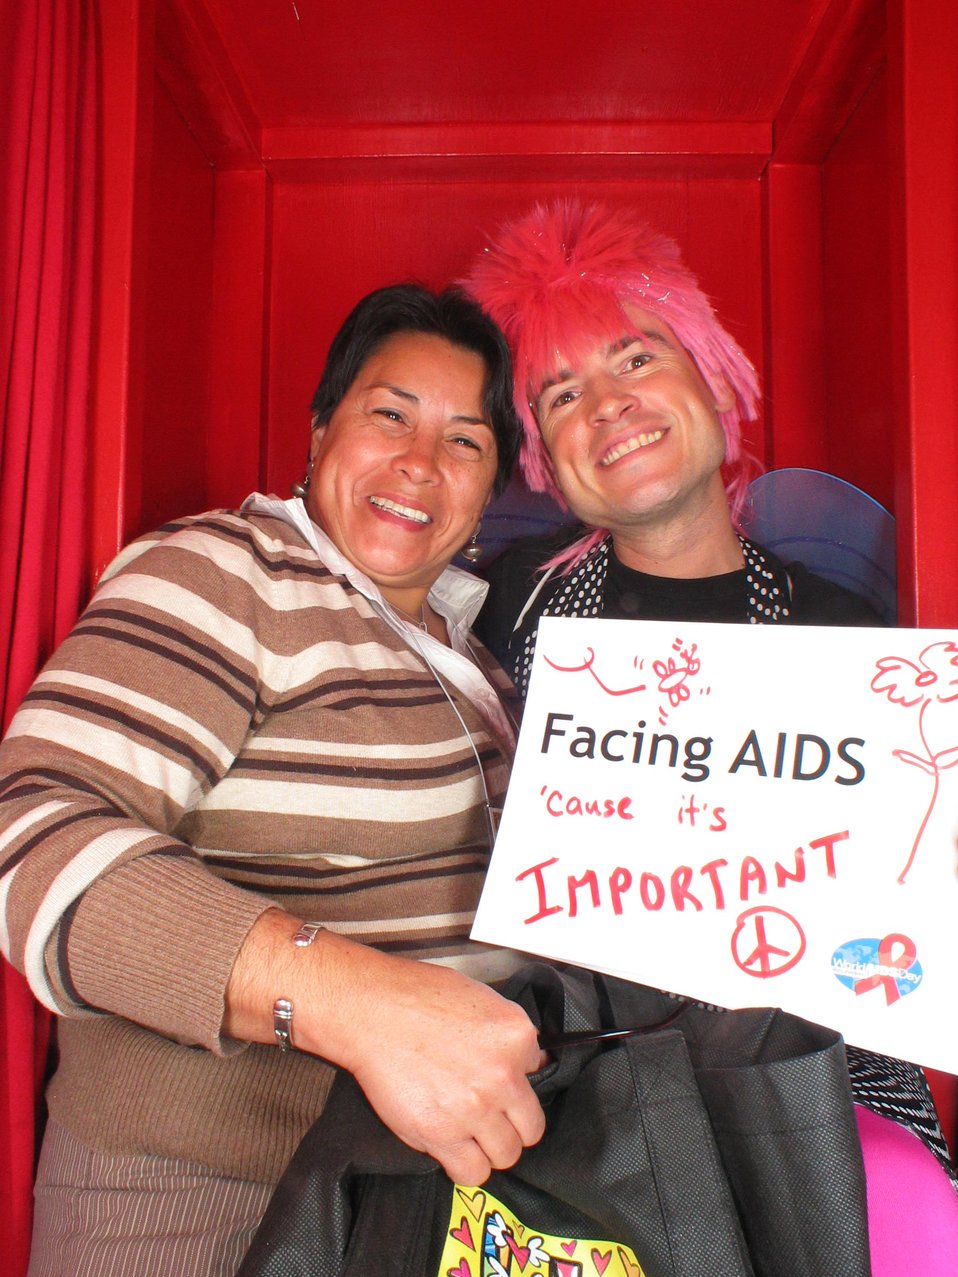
Facing AIDS because its important